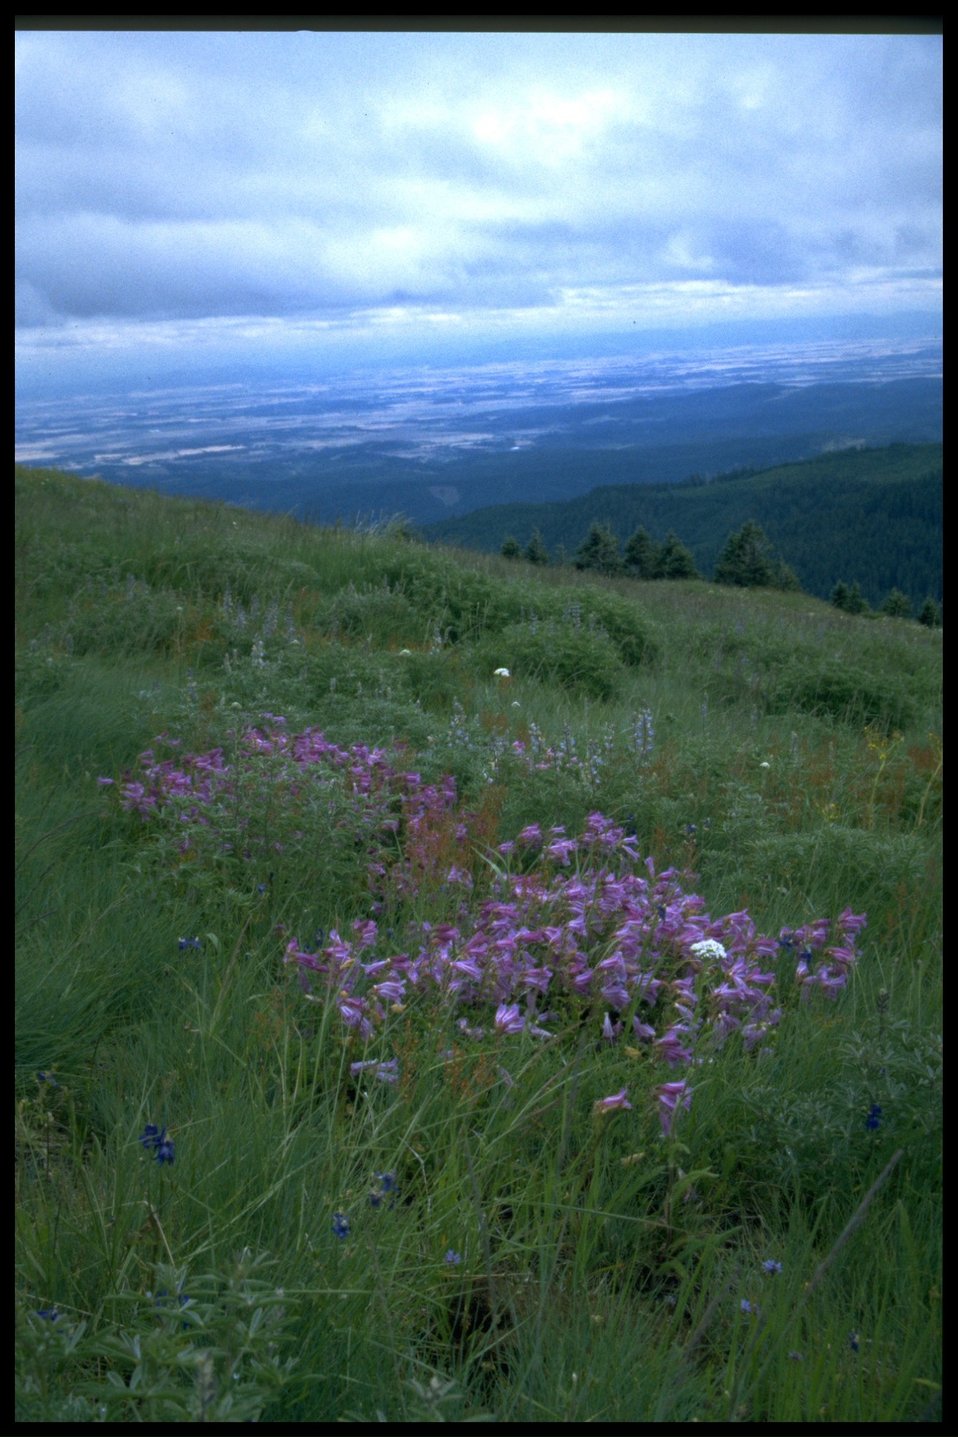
Farshot of wildflowers (genus Penstemon).